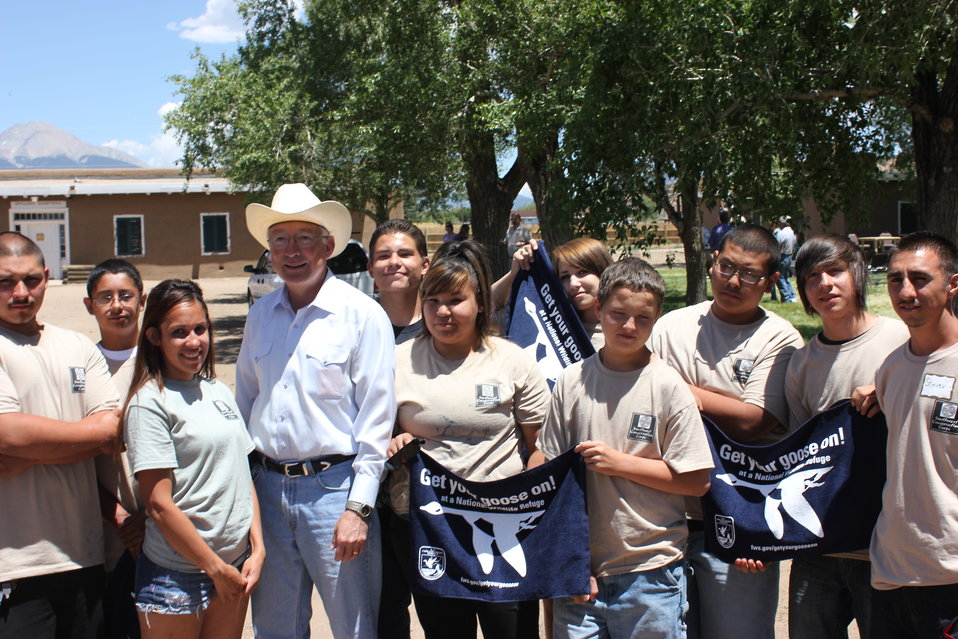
Secretary Salazar and Southwest Conservation Corps Youth

These youngsters helped prepare the grounds for the announcement of one of the largest conservation easement donations in the history of the country. Afterwards, they had the honor of meeting the Secretary of the Interior, Ken Salazar. In this photo they proudly display their Get Your Goose On! towels.